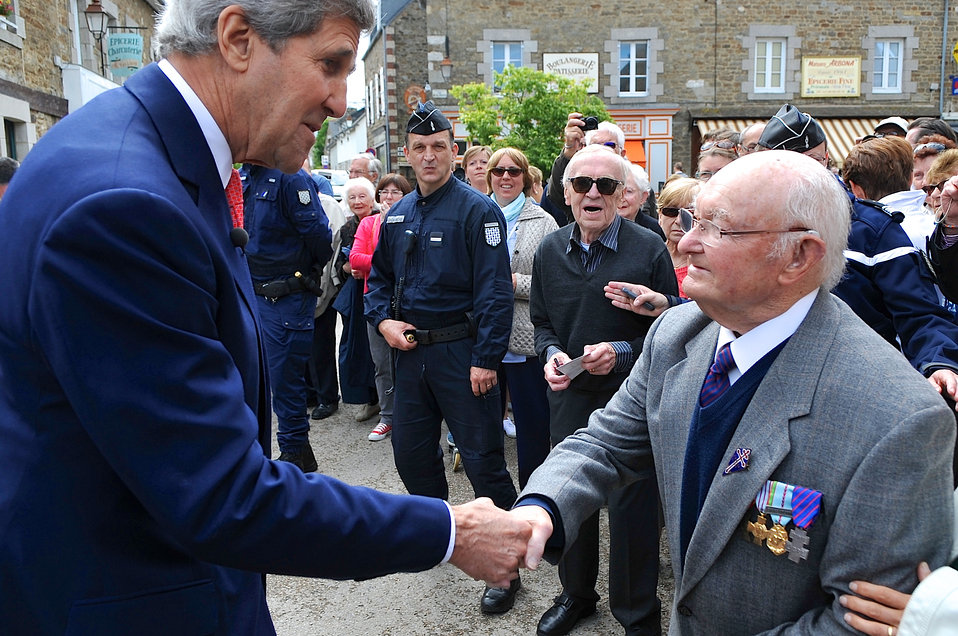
Secretary Kerry Greets French Veteran During Visit to Brittany Town For Commemorative Ceremony

U.S. Secretary of State John Kerry greets a French veteran on June 7, 2014, during a visit to the Brittany town of Saint Briac, France, to commemorate the 70th anniversary of D-Day and to thank local residents for saving the remnants of his family home after the Nazis destroyed it as American liberators approached in 1944.